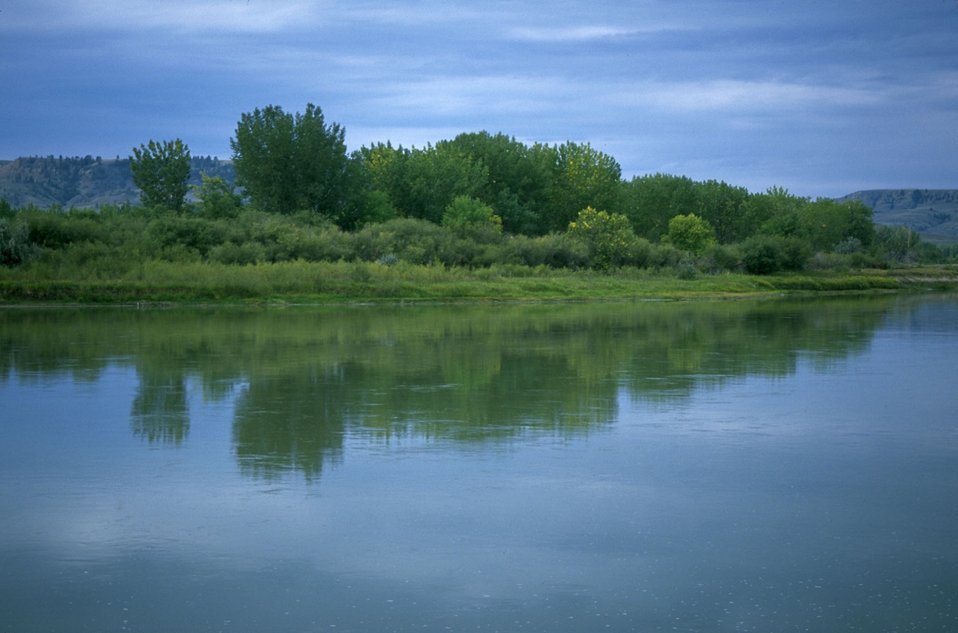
Upper Missouri River